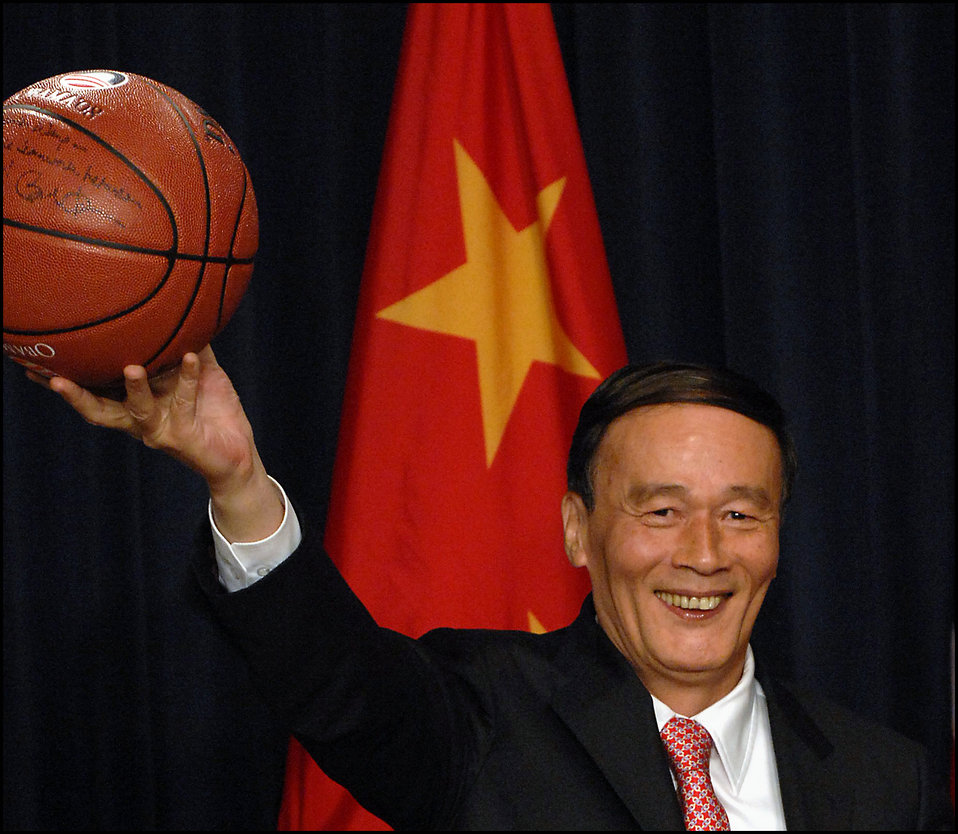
SandED: July 27-28, 2009